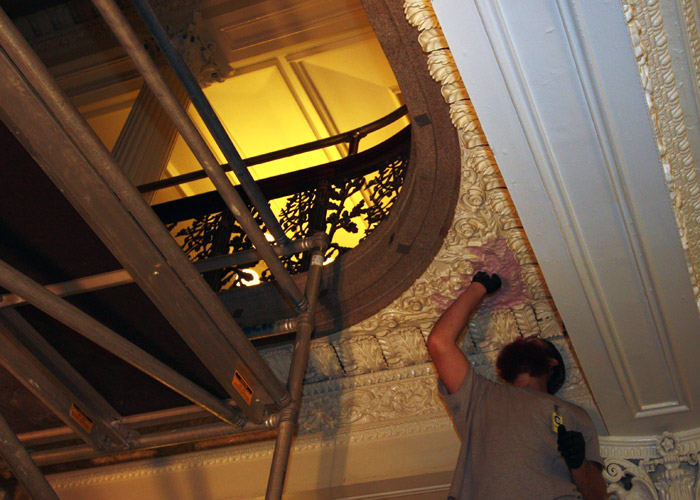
Historic Restoration of the Treasury Stairwells

The underside of every floor of the stairwell has a pressed metal ceiling detail in the corners and along the perimeter. A flexible molding material is spread over the metal ceiling and allowed to dry to form a mold for casting missing details.